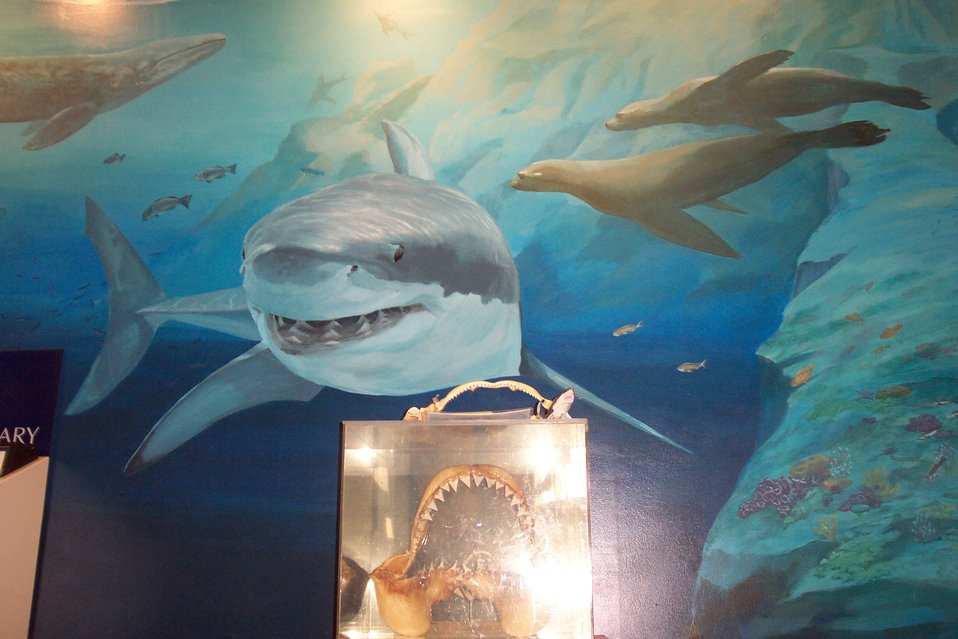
A great white shark image dominates a wall mural at the NOAA Gulf of the Farallons National Marine Sanctuary Headquarters.